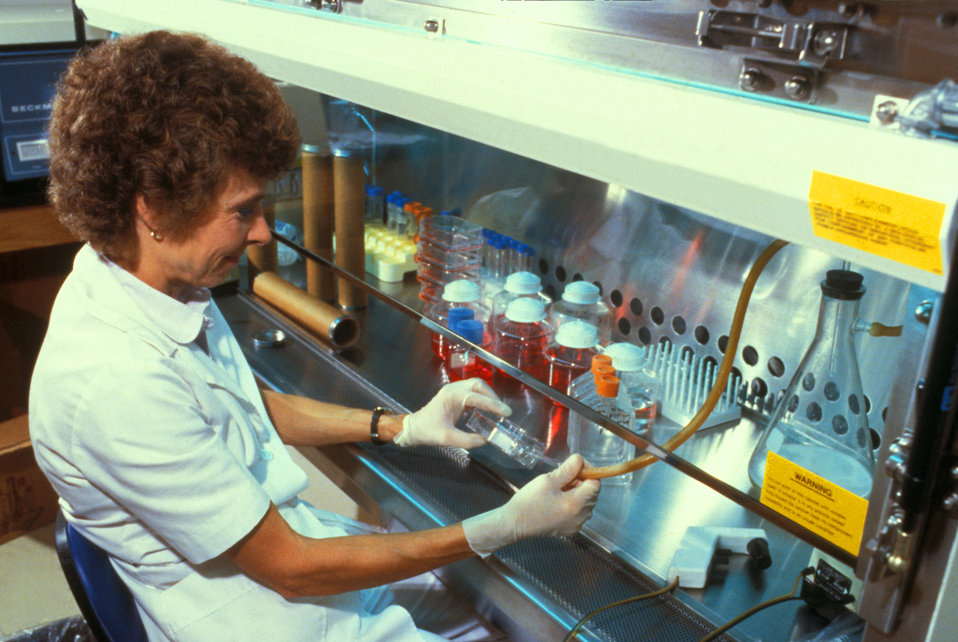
This CDC lab technician is carrying out AIDS research during 1988 laboratory studies.